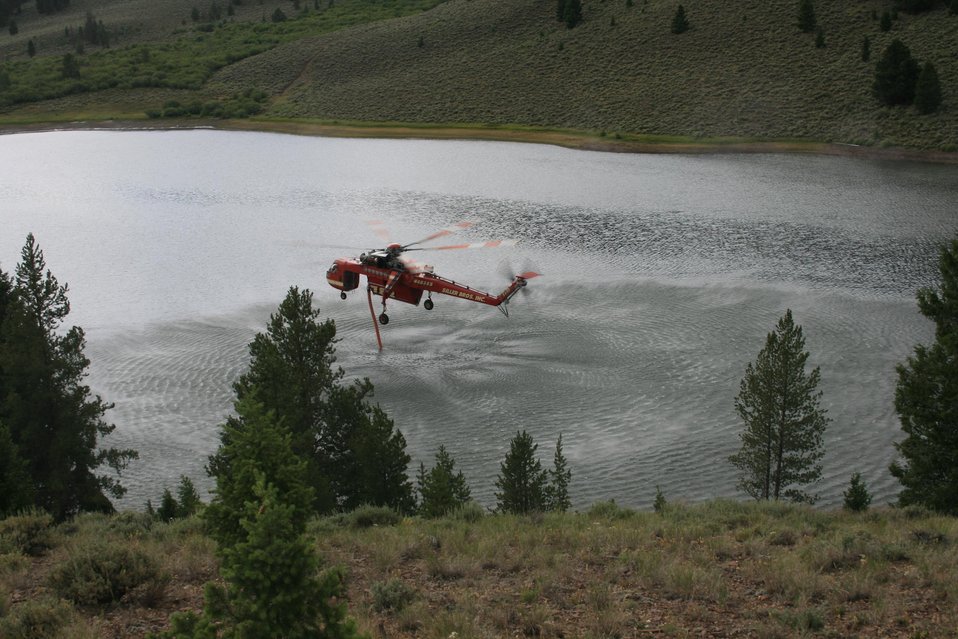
Sky crane gathers water for Lodgepole Fire on Jul. 26, 2013. The Lodgepole Fire in the Salmon-Challis National Forest near Challis, ID began on Jul. 20, 2013 by lightning has consumed approximately 13,700 acres and is approximately 15% contained.